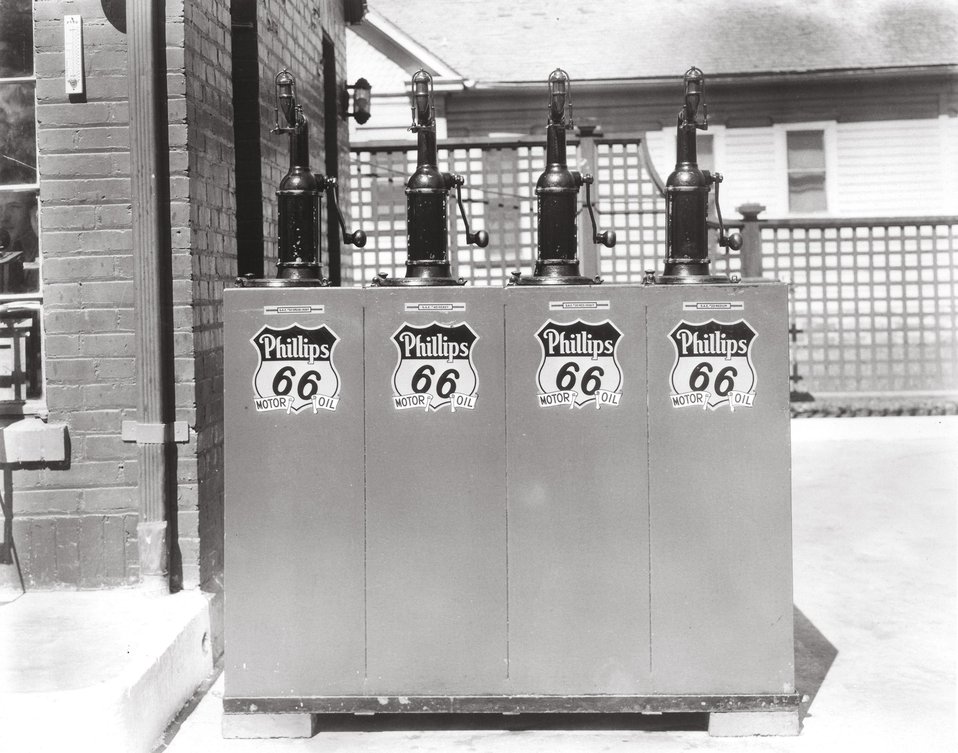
Motor oil dispensers. c. undated